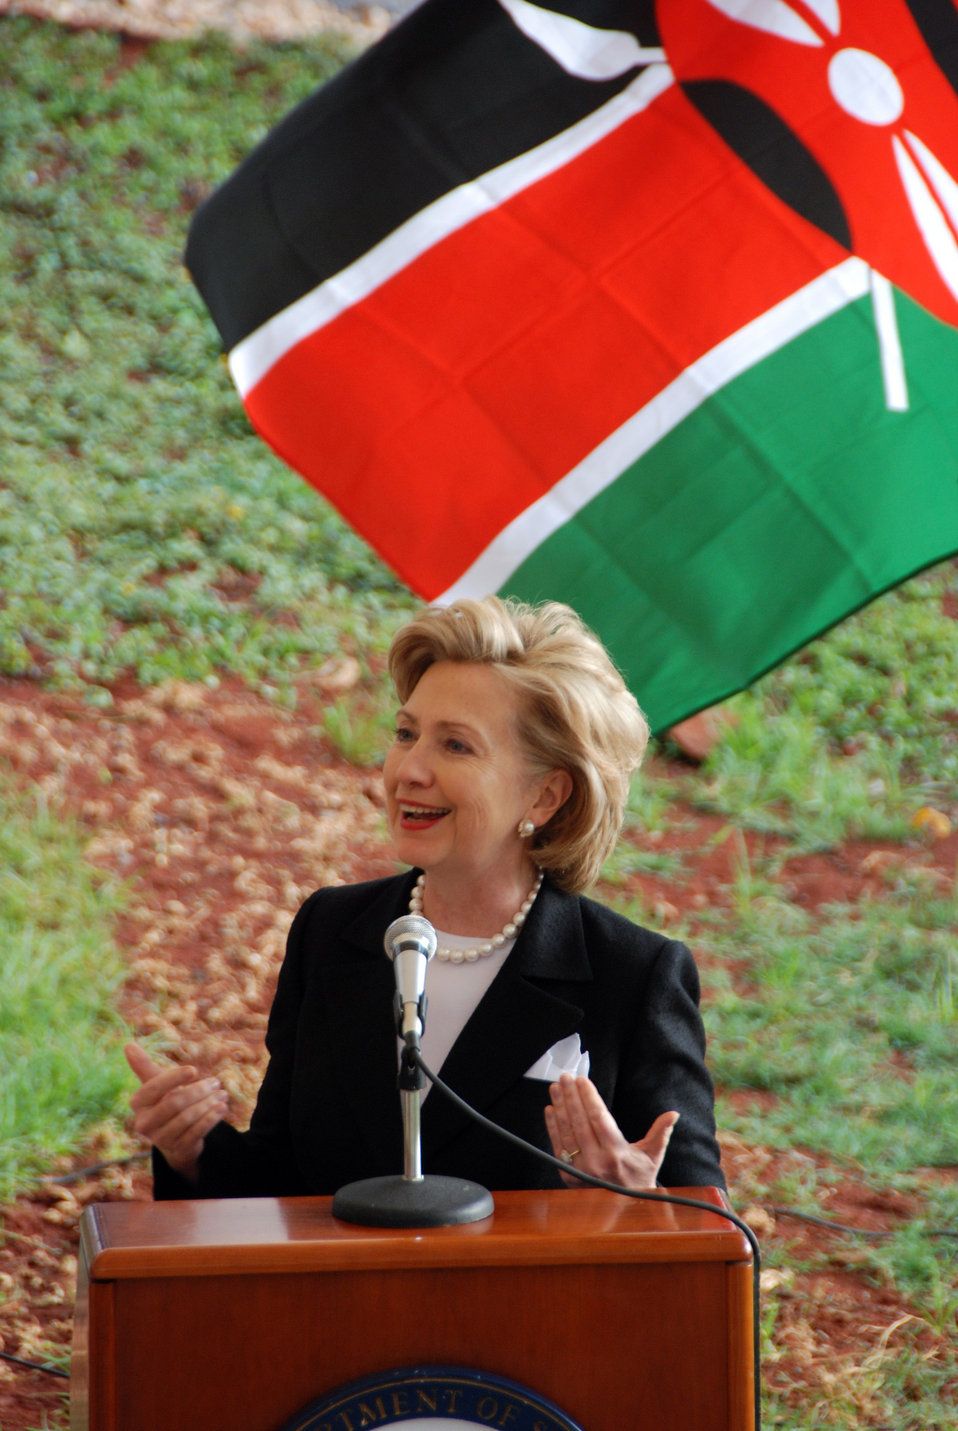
Secretary Clinton Addresses U.S. Embassy Staff in Kenya

U.S. Secretary of State Hillary Rodham Clinton addresses U.S. Embassy employees in Nairobi, Kenya August 6, 2009.